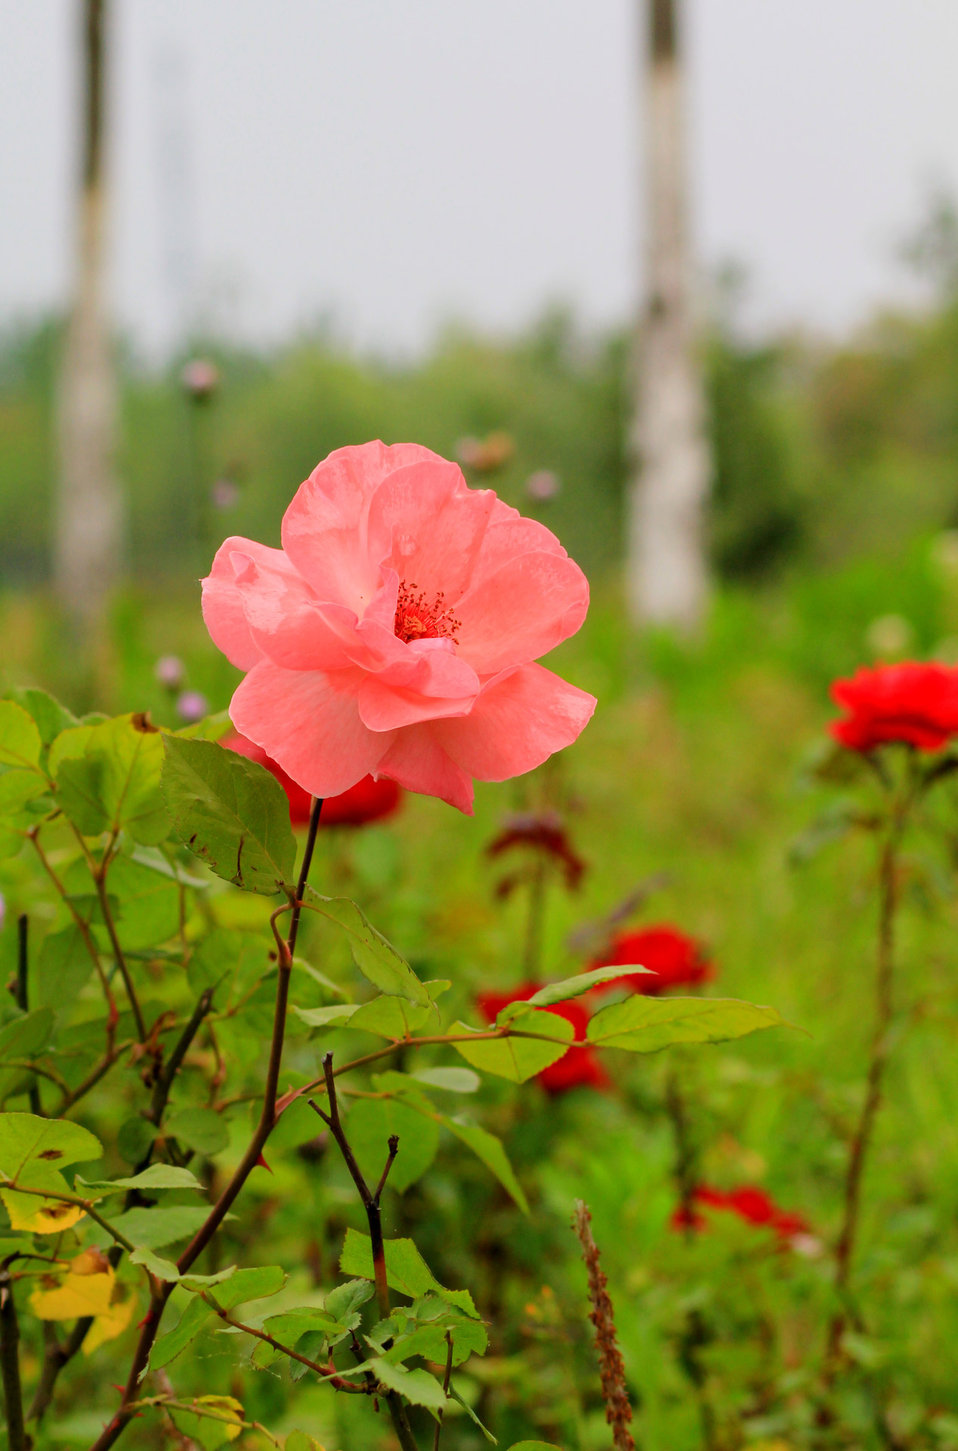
Pink roses

Bright pink roses.